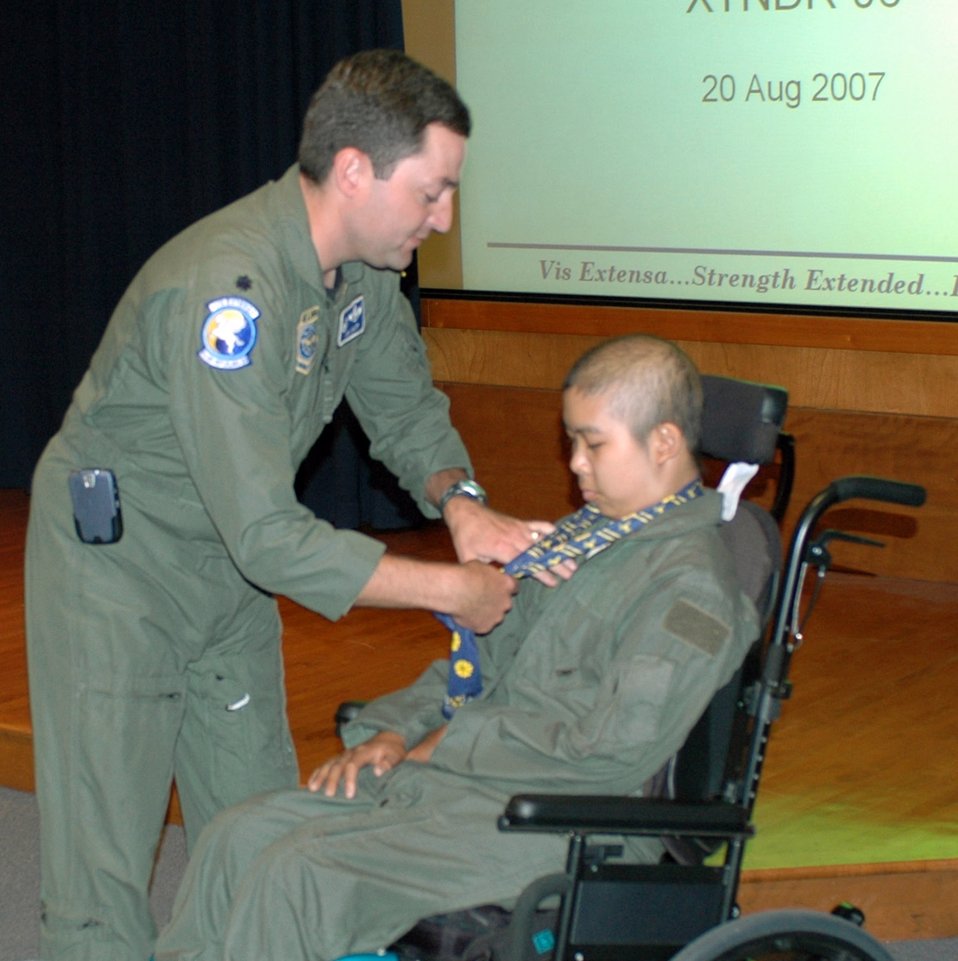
Travis Airmen grant child's wish

Lt. Col. Jim Craft, 6th Air Refueling Squadron commander, provides Mitchell Louie with the squadron scarf, patches, dog tags and a coin before setting out to experience his day as a pilot. During his day, Mitchell toured the air traffic control tower, refueled fighters using the KC-10 boom operator trainer simulator and with the help of a simulator, piloted a KC-10 Extender around the San Francisco Bay and other exotic locations.